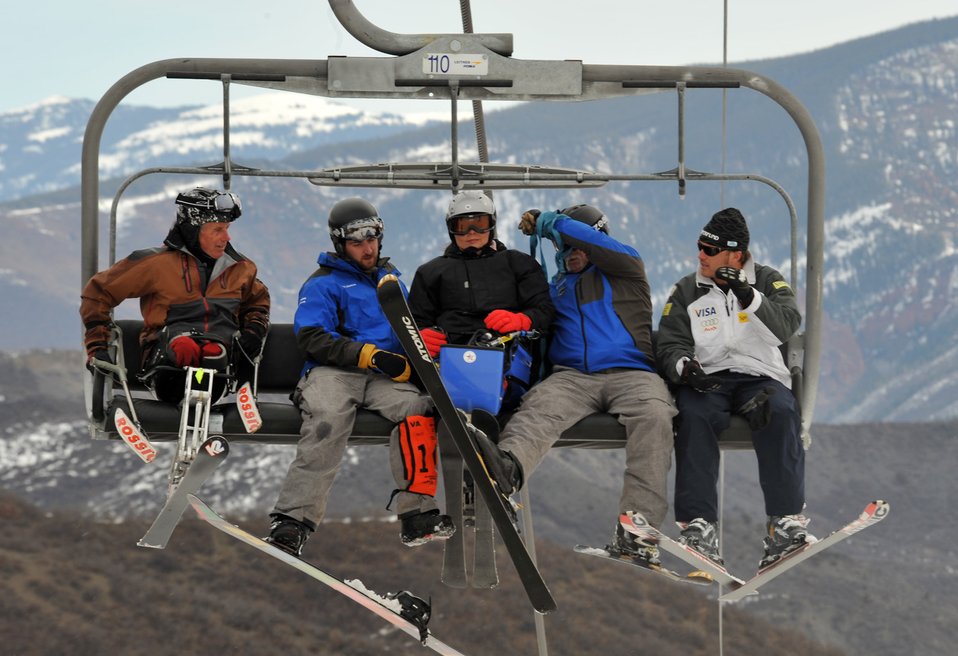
Assistant VA secretary, U.S. Olympians join veterans on ski slopes

Veterans Tammy Duckworth and Jim Martinson ride a ski lift with Bode Miller during the 24th National Disabled American Veterans Winter Sports Clinic March 31, 2010, in Snowmass Village, Colo. Bode is an Olympic Gold Medalist. Mrs. Duckworth is the assistant secretary of Veterans Affairs. Mr. Martinson is a disabled Army veteran and a U.S. Paralympian. The event is sponsored by the Department of Veterans Affairs and Disabled American Veterans.